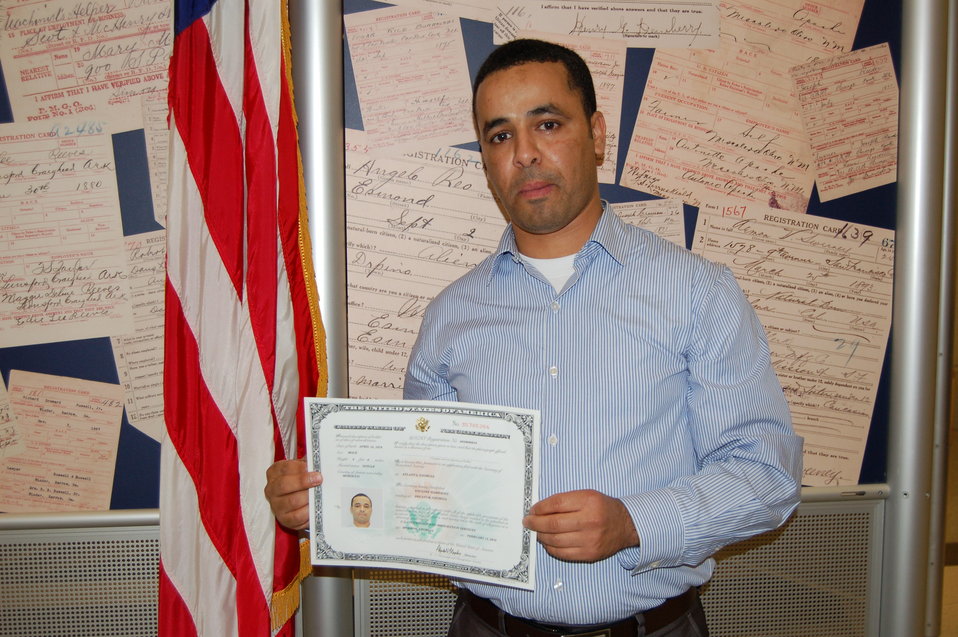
New Citizens